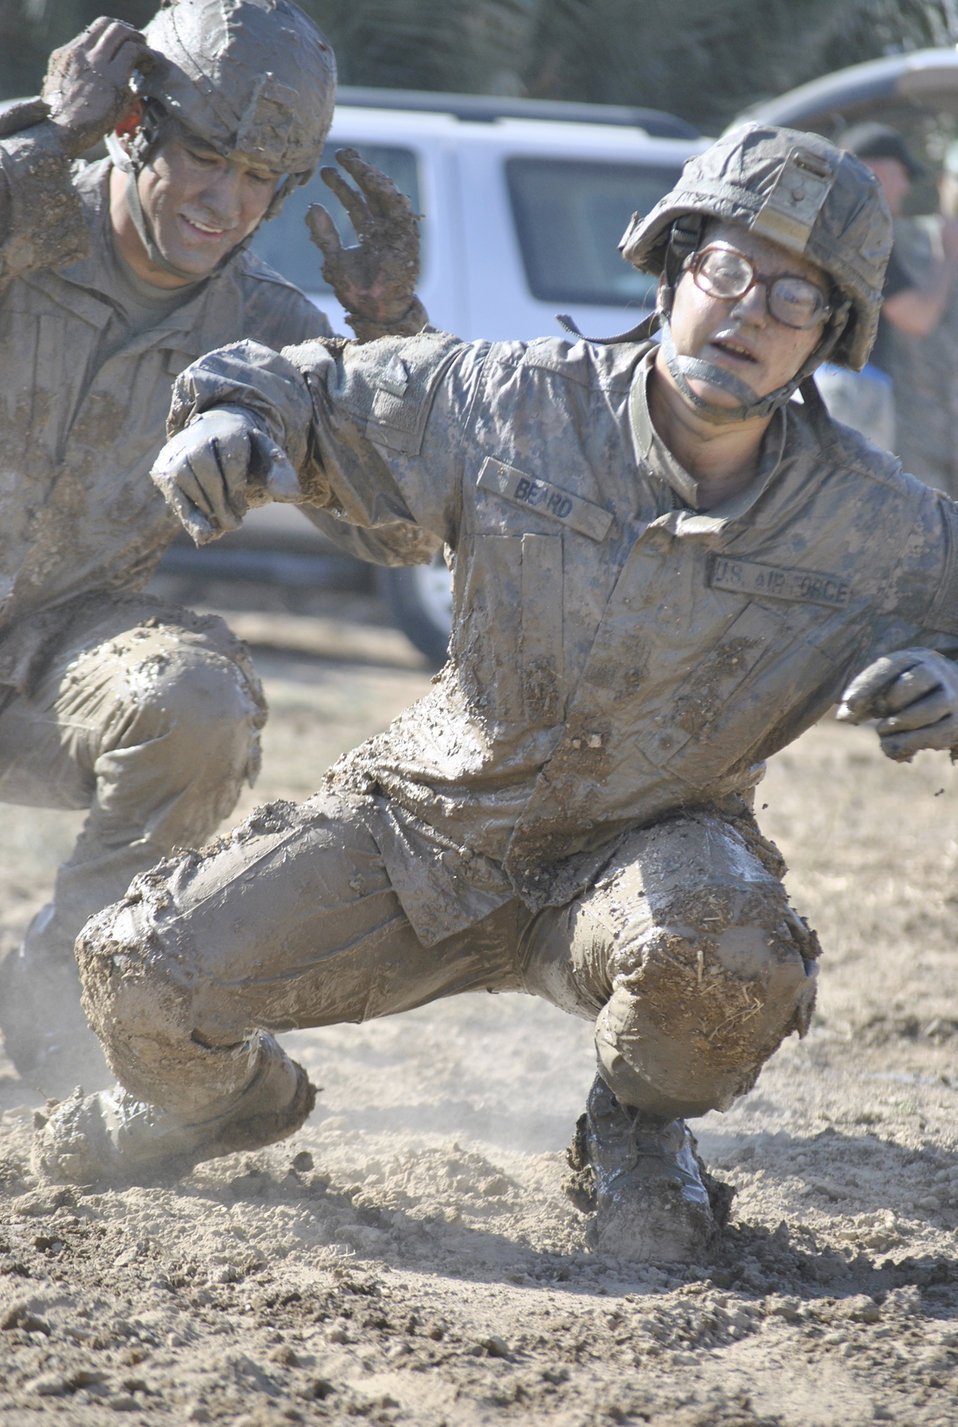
Airman marches, low-crawls and sweats her way into history: Part two

Senior Airman Courtney Beard duck-walks her way back to the start of an obstacle course Nov. 21, 2010, at Victory Base Complex, Iraq. The Brooklyn, N.Y., native was the first female Airman to complete the 18-hour Spur Ride, a series of mental and physical tests, held by the III Corps, Task Force Phantom. Airman Beard is a 467th Expeditionary Intelligence Squadron intelligence analyst.